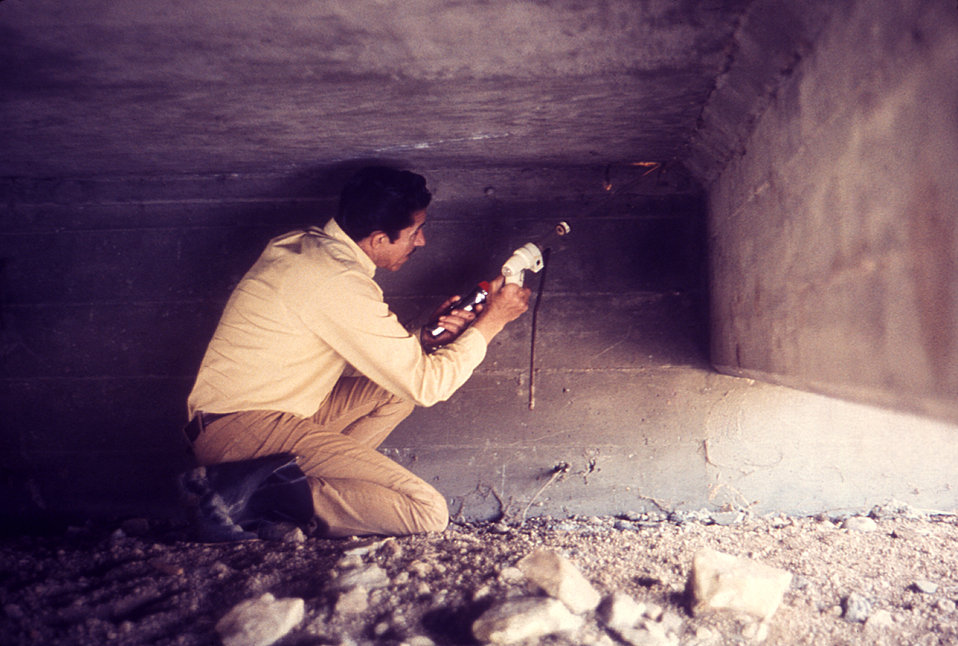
Using a mechanical hand-held aspirator, this field researcher was collecting mosquitoes that had landed on the cement structure beneath a bridge.